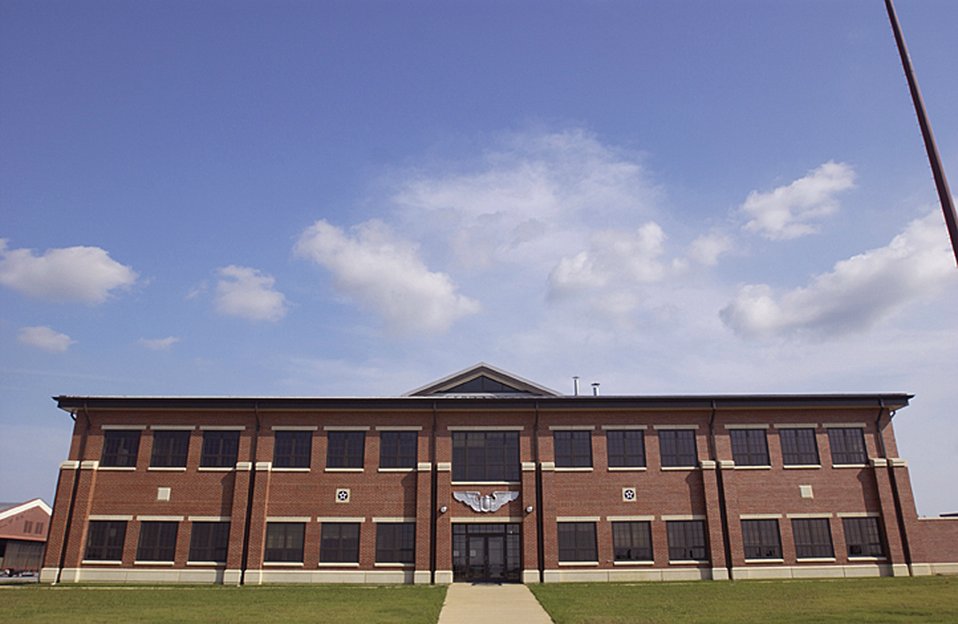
Langley offers mix of new, old aircraft

LANGLEY AIR FORCE BASE, Va. -- The exterior of a new building here reflects the architecture of the early 1920s.